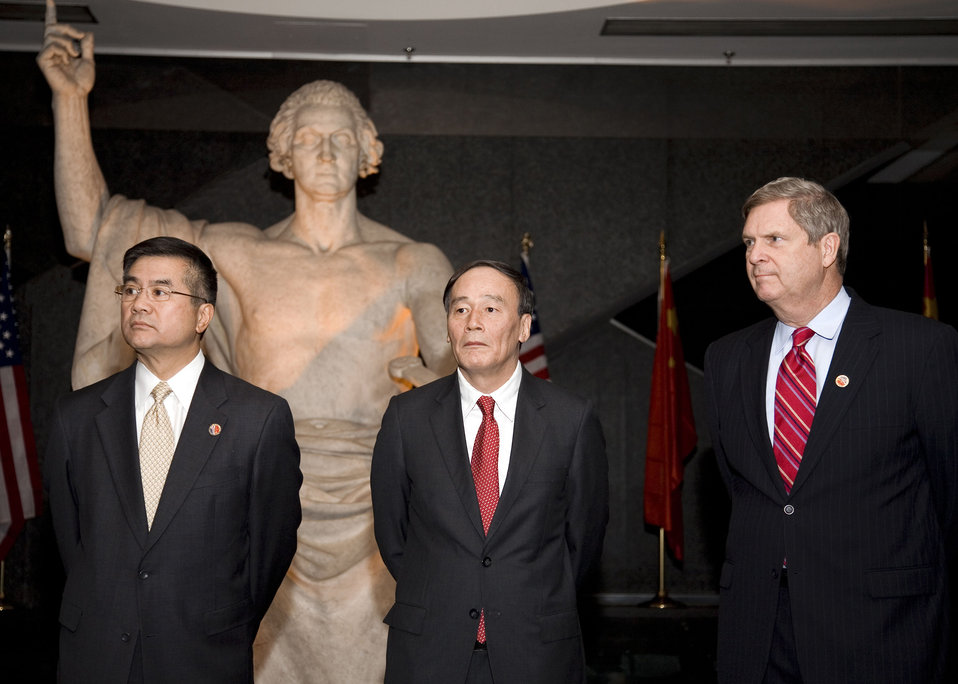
(L to R) Commerce Secretary Gary Locke, Chinese Vice Premier Wang Qishan, and Agriculture Secretary Tom Vilsack at the Department of Commerce, in Washington, D.C., for the 21st session of the U.S. - China Joint Commission on Commerce and Trade (JCCT) held on Wednesday,
December 15, 2010. USDA photo 10di1573-7880.